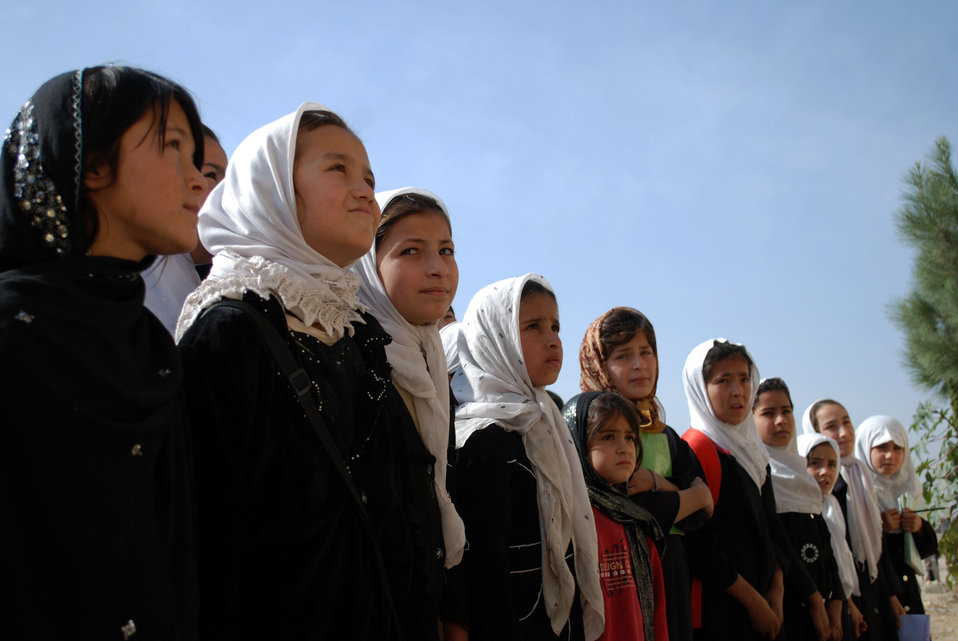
'On the Road' in Balkh Province